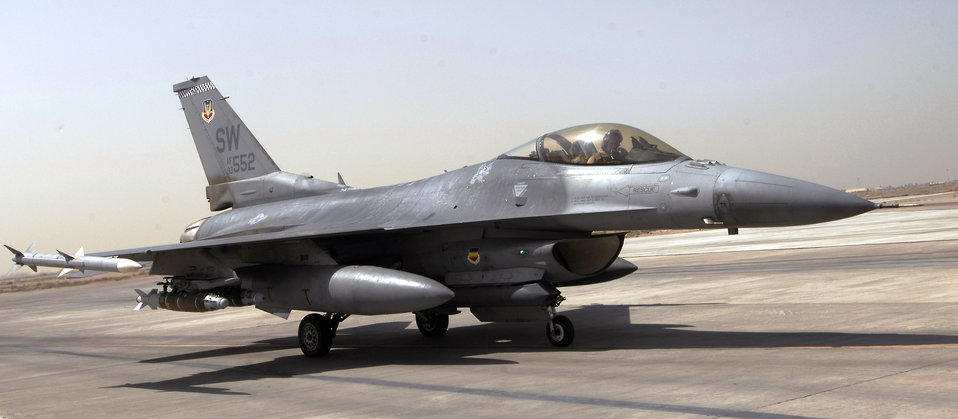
Airmen employ laser joint direct attack munition in Iraq

An F-16 Fighting Falcon piloted by Capt. Michael Lutmer and loaded with 500-pound guided bomb unit-54 laser joint direct attack munitions awaits clearance to take off Aug. 15 from Joint Base Balad, Iraq. Two F-16 pilots with the 77th Expeditionary Fighter Squadron here employed a GBU-54 Aug. 12 against a moving enemy vehicle in Diyala province to support a combined Iraqi army and U.S. Marine operation. Captain Lutmer is a pilot with the 77th EFS and deployed from Shaw Air Force Base, S.C.